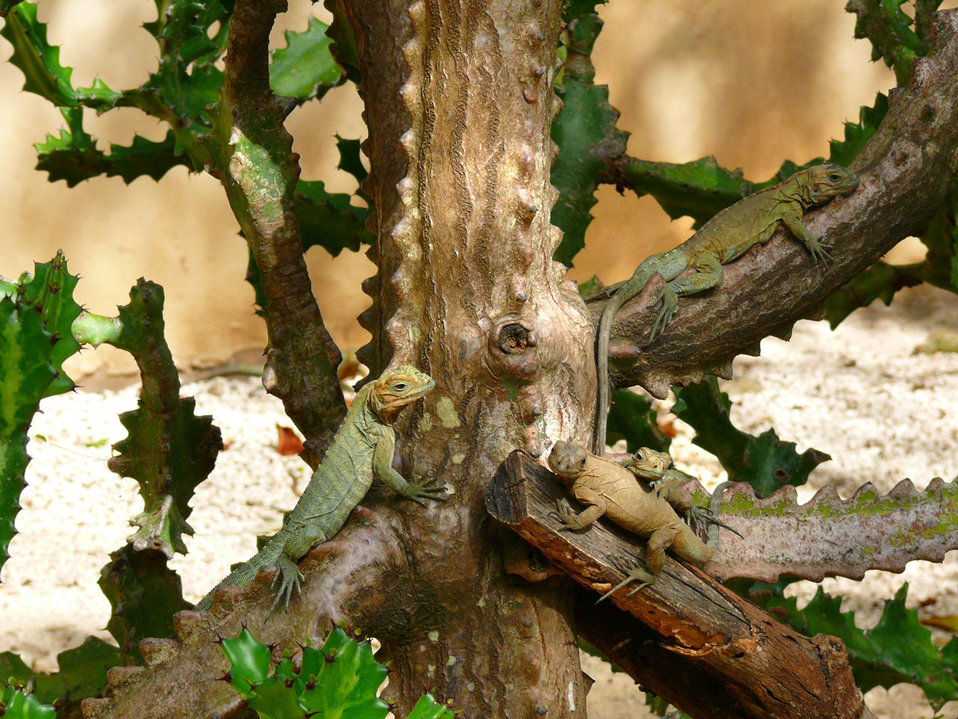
Iguanas on the tree.